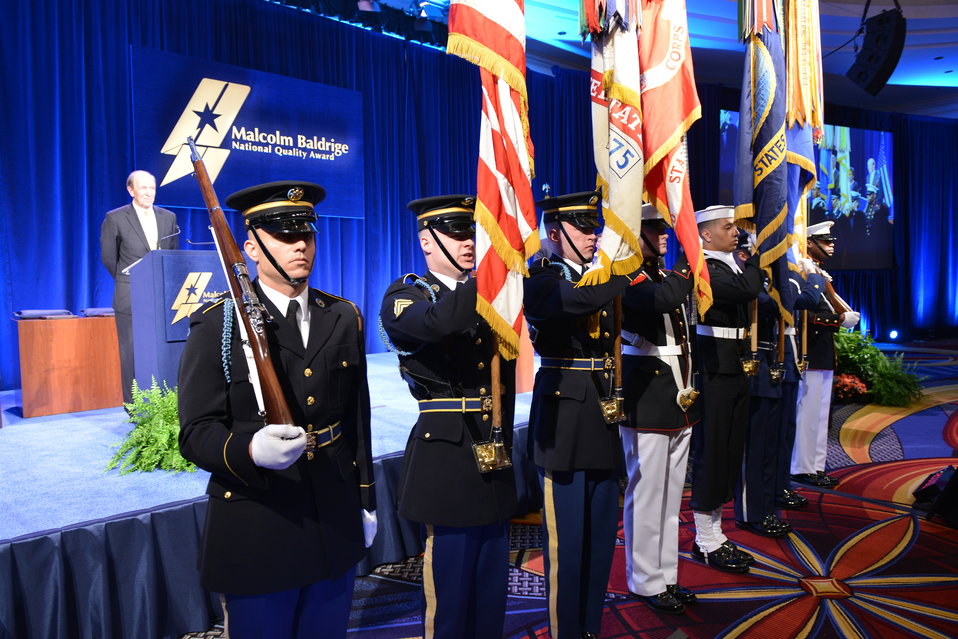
U.S. Joint Service Color Guard, 2013 Baldrige Award Ceremony, April 6, 2014

Foundation Chair George Benson and the US Joint Service Color Guard; 2013 Baldrige Award Ceremony, April 6, 2014